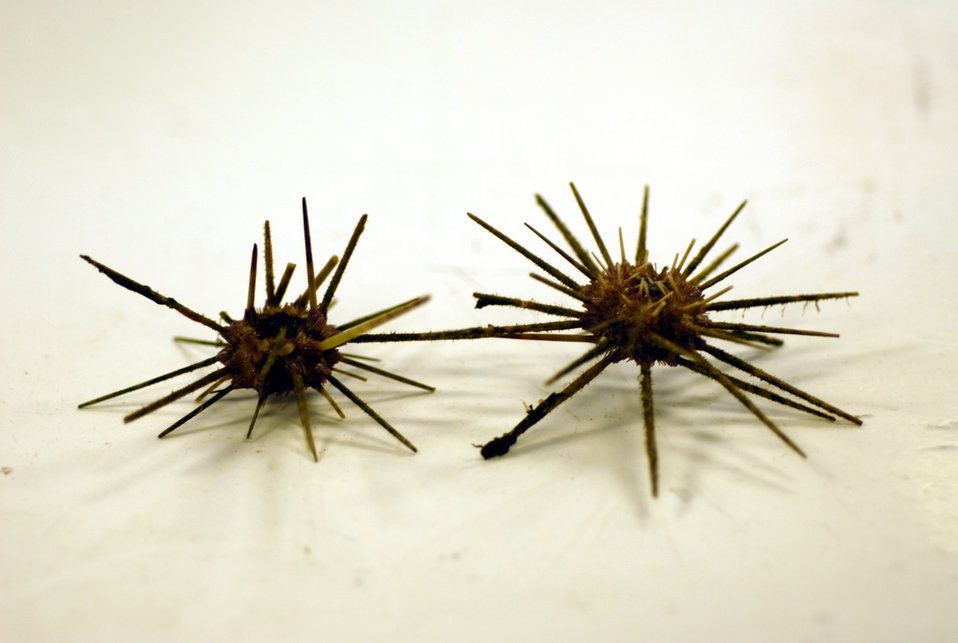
A species of pencil urchin ( Stylocidaris affinis )